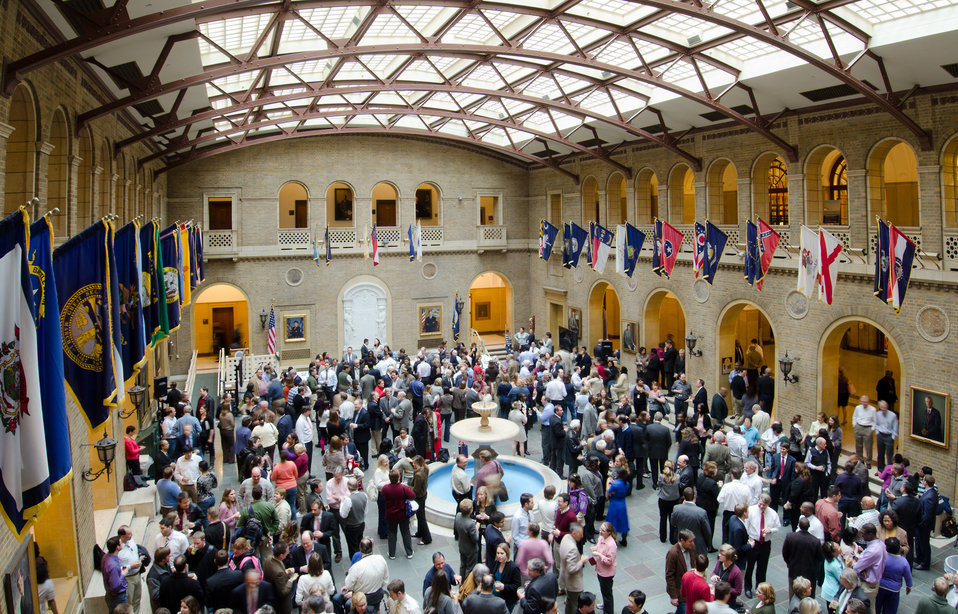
U.S. Department of Agriculture (USDA) Secretary Tom Vilsack and his wife Christie hosted a get together of colleagues for conversation and a break from the day-to-day routine on the Patio of the Whitten Building in Washington, DC, on Friday, March 25, 2011. Secretary Vilsack sponsored the pop and pretzel event “to help recognize the great work we are doing together for the American people'. The event enjoyed standing room only, attendance.